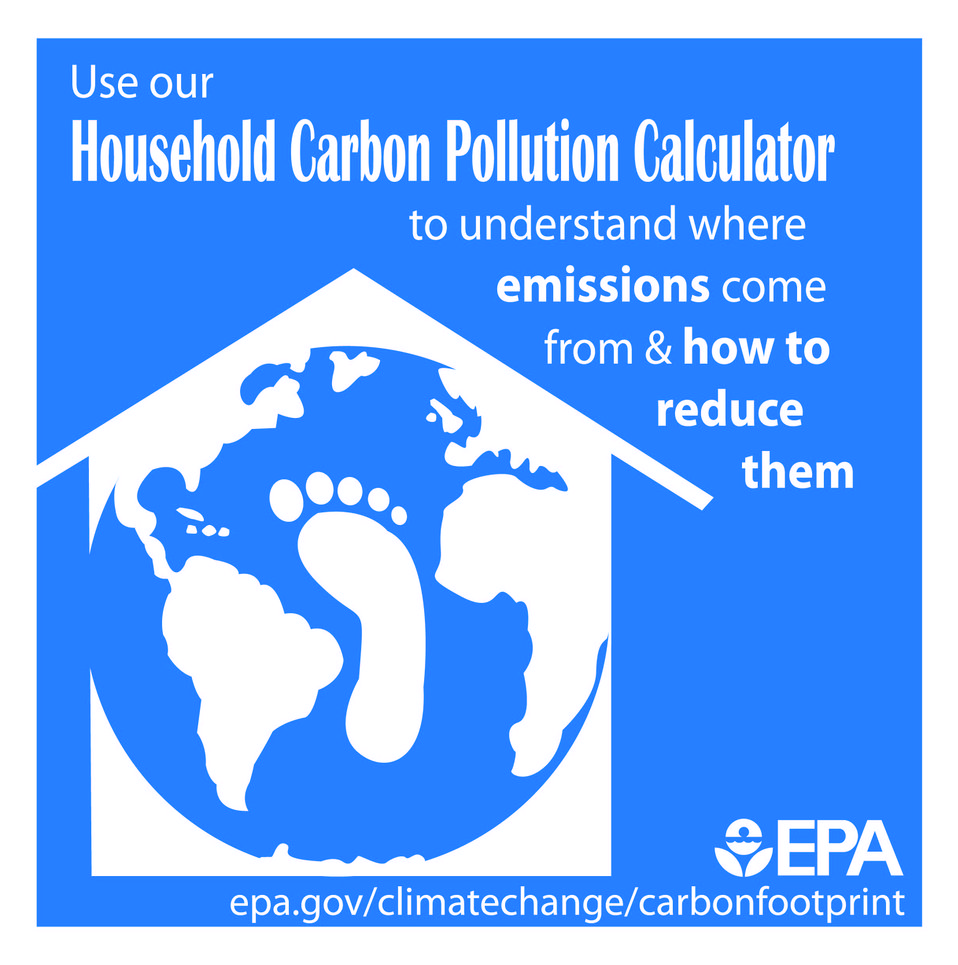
Household Carbon Pollution Calculator

Many of our daily activities cause emissions of greenhouse gases, including carbon pollution. Use our household GHG emissions calculator to estimate your annual greenhouse gas emissions: www.epa.gov/climatechange/carbonfootprint